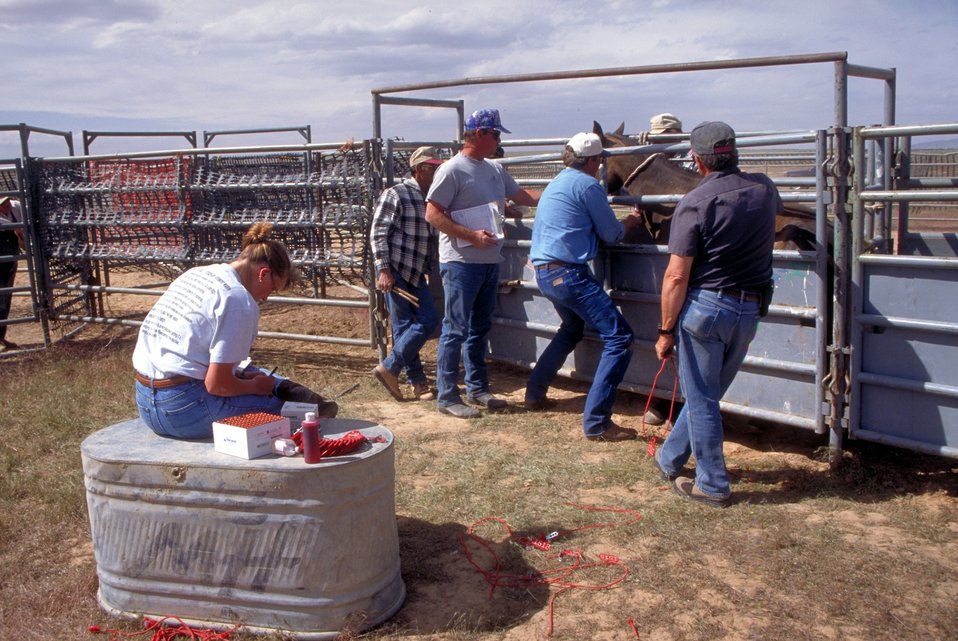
EIA testing near Vernal, Utah.